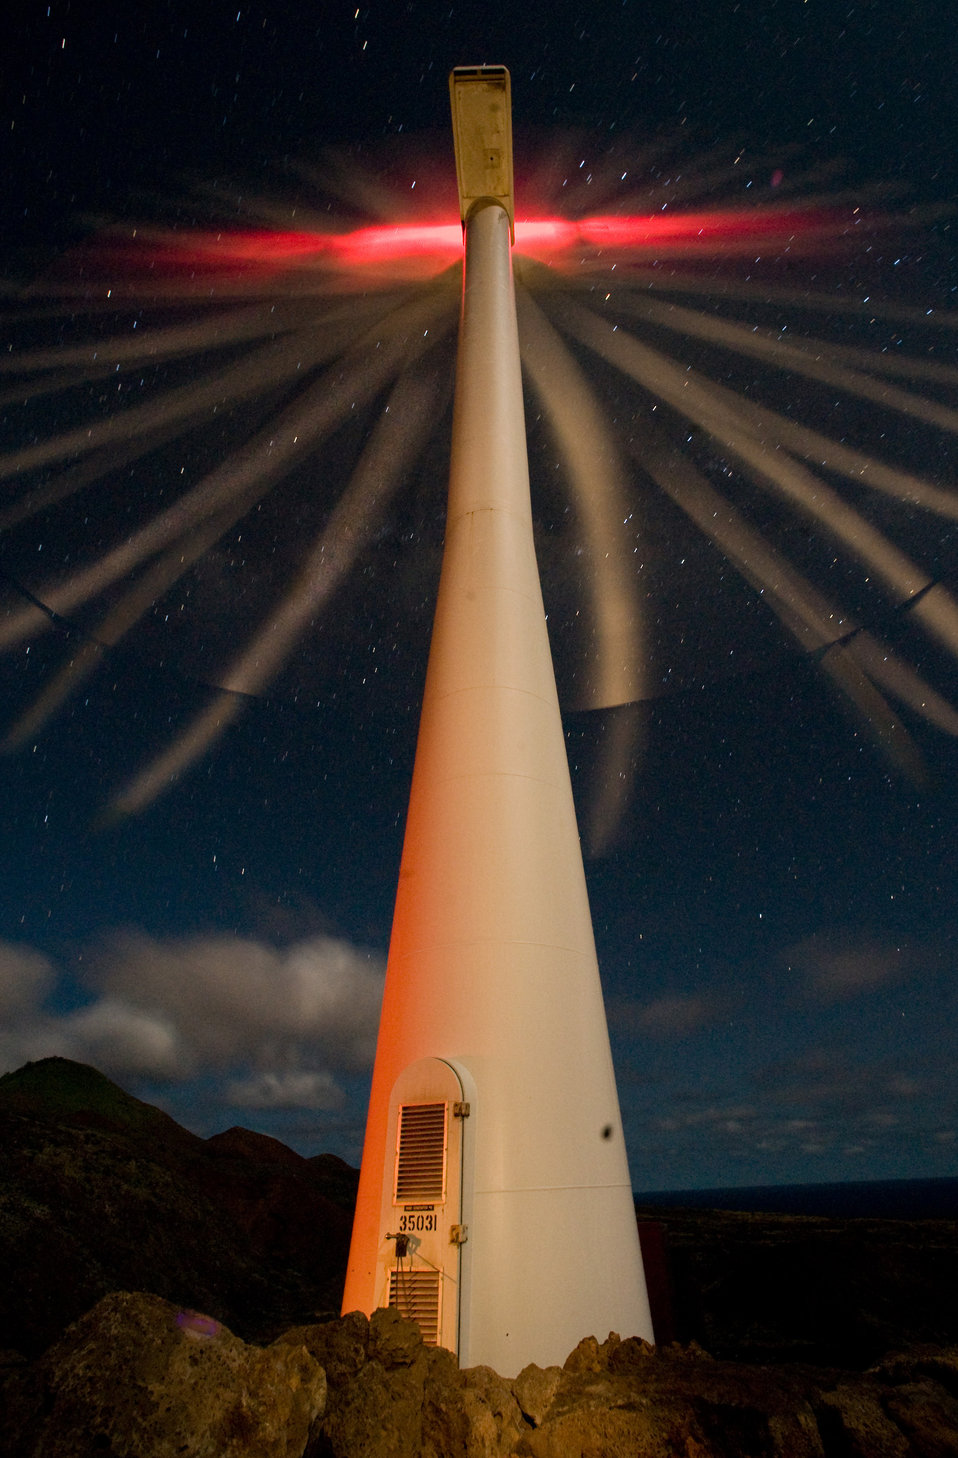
Win with Wind

Long exposure and multiple light reveals the 110-foot high tower that holds a 900kW wind turbine, with three 4.2 ton blades that rotate 25.5 meters further up at 45th Operations Group Detachment 2, Ascension Auxiliary Airfield (AAF), South Atlantic Ocean. The lighting on the blades illustrates the span of the rotor disk. The long exposure also reveals the star filled night that is easily seen in the clear skies and little light polution. The wind turbines work in parallel with low-load diesel generators powering the airfield, Space Command sites and facilities, and a royal air force airfield facility on the island. Ascension AAF's award winning economical self-sufficiency solutions also includes drinking water production and waste water treatment. The mission of Det. 2 is support of eastern range space launches by collecting and disseminating radar, telemetry and tracking data. Ascension island is 35 square miles in a remote island location midway between Brazil and Angola. The nearest country is Liberia - 1000 miles away.